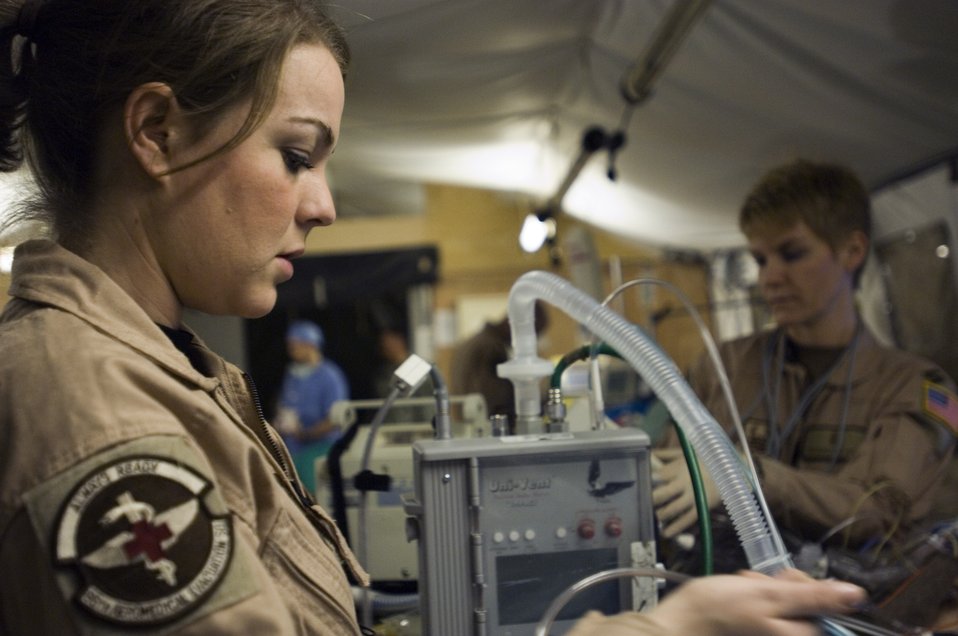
Medical teams provide priceless gift

Senior Airman Casey Castleberry prepares a critical-care patient Feb. 14 for transport on a C-17 Globemaster III from Balad Air Base, Iraq, to Landstuhl, Germany, where he will receive further care for his wounds. Airman Castleberry is a respiratory therapist assigned to the 332nd Expeditionary Operations Group.